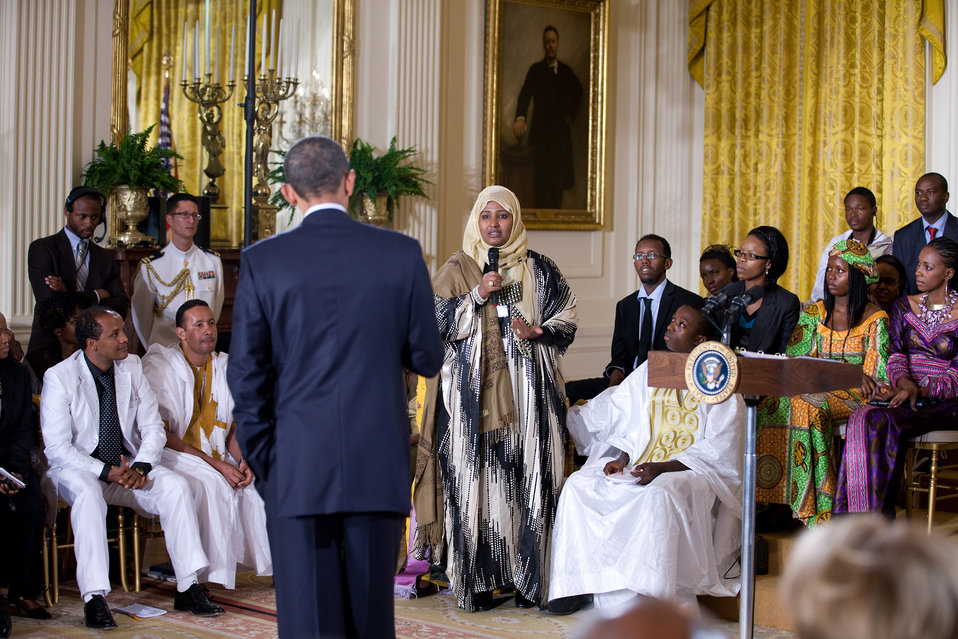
President Obama Listens to a Question from Najma Ahmed of Somalia

President Barack Obama listens to a question from Najma Ahmed of Somalia during a town hall-style meeting with young African leaders in the East Room of the White House in Washington, D.C., on August 3, 2010.